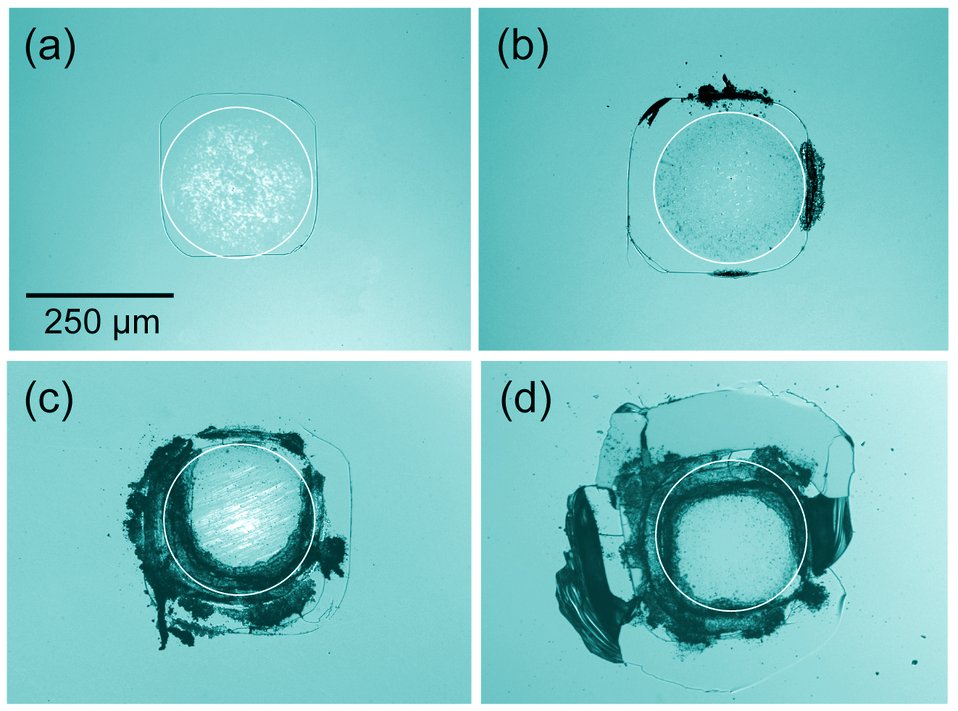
Fatigue Effects in Silicon

Optical micrographs of contact damage in silicon from cyclic stress show progressive damage after (a) 1,000 cycles, (b) 5,000 cycles, (c) 20,000 cycles and (d) 85,000 cycles. Color added for clarity, white circle shows computed size of the contact circle.